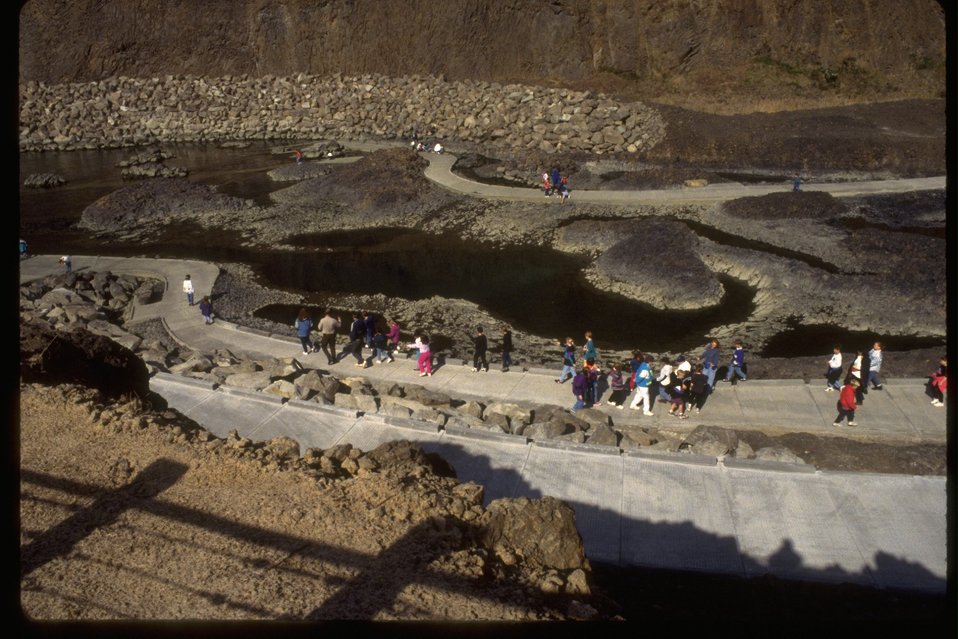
Quarry Cove Tidepools at the Yaquina Head ONA.